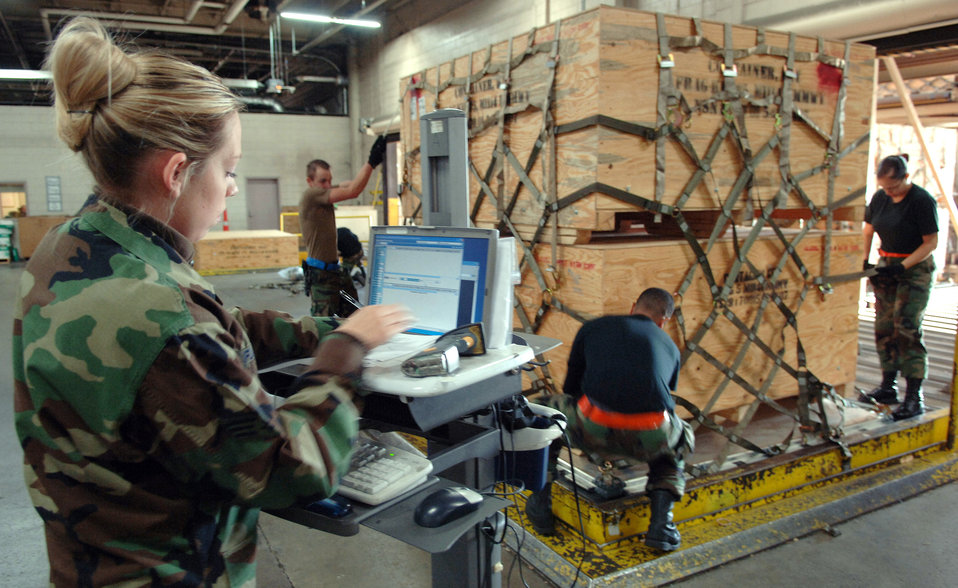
Loading Up

Senior Airman Cecilia Fuller, foreground, checks the cargo pallet content listing to ensure all pallets are properly labeled while fellow airmen strap netting down to secure cargo to the pallet at Charleston Air Force Base, S.C., Oct. 25, 2006. Airman Fuller is an air transportation specialist with the 437th Aerial Port Squadron, Charleston Air Force Base, S.C.